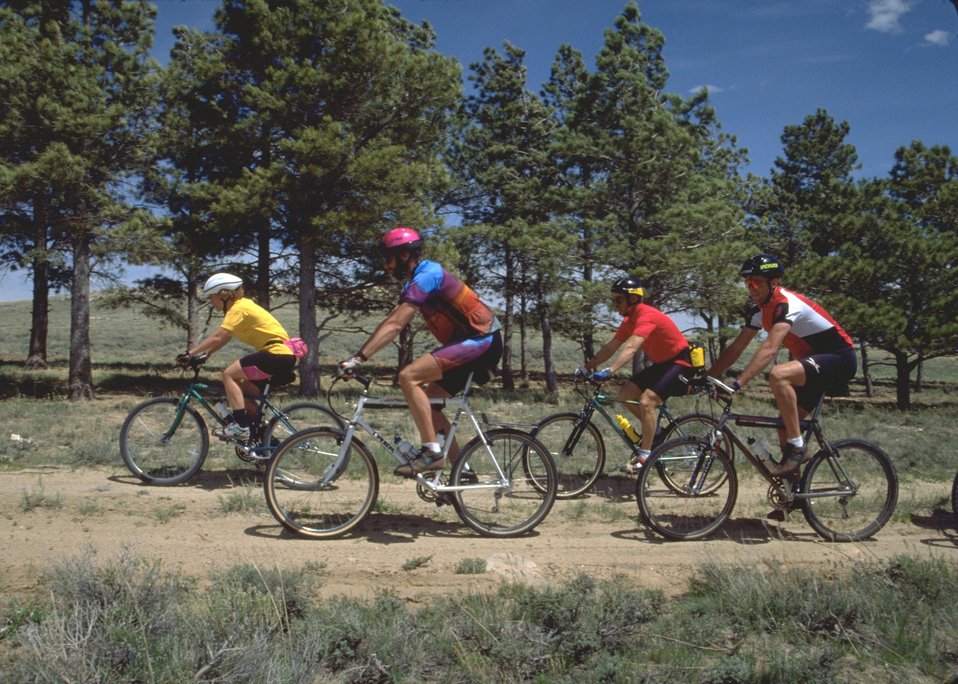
Bike riding on an unknown trail.